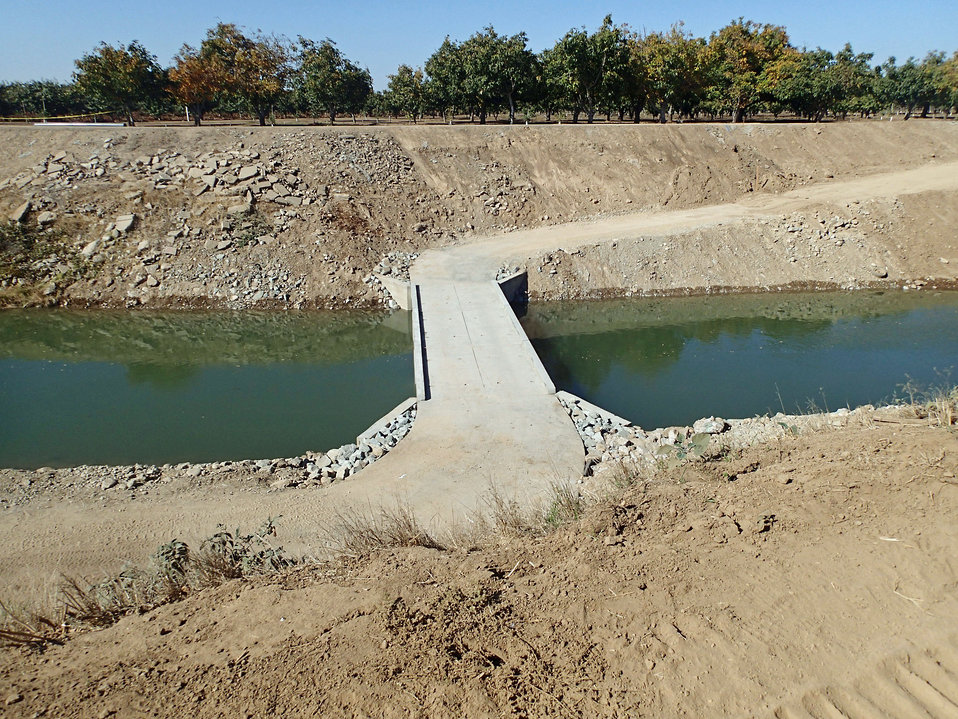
Aerial view of Calaveras River Fish Passage Project

located on Mormon Slough, a channel of the Calaveras River east of Stockton, CA